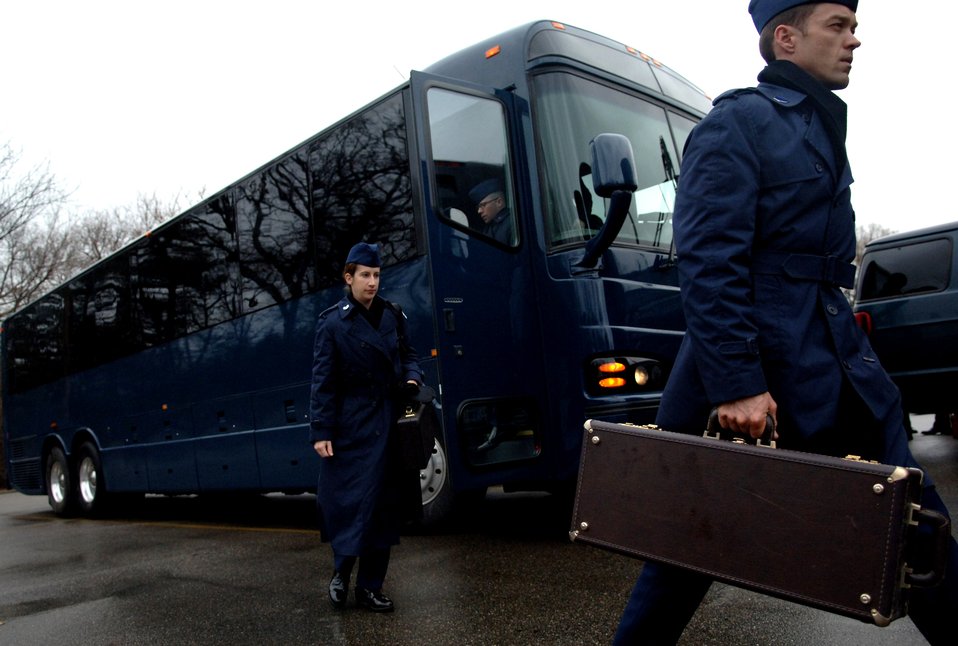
Air Force band plays final tribute for President Ford

Air Force musicians arrive Jan. 1 at Grace Episcopal Church in Grand Rapids, Mich., to rehearse for the funeral service for President Gerald R. Ford.